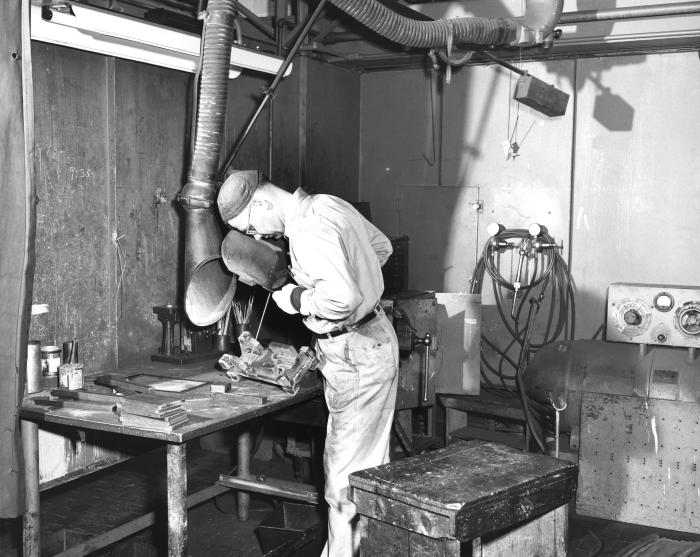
This historical 1953 photograph was provided by the Center for Disease Control's (CDC), National Institute for Occupational Safety and Health (NIOSH). Inside the Baltimore, Maryland Crown Cork and Seal Co., this image depicted a standing inductrial worker in the process of using an arc welding device, while wearing protective gloves, and a safety mask. Note the flexible exhaust ventilation hose, which could be positioned at will, maneauvering the vacuum into the most efficient position that would facilitate the extraction of noxious fumes, which were a byproduct of the arc welding process.